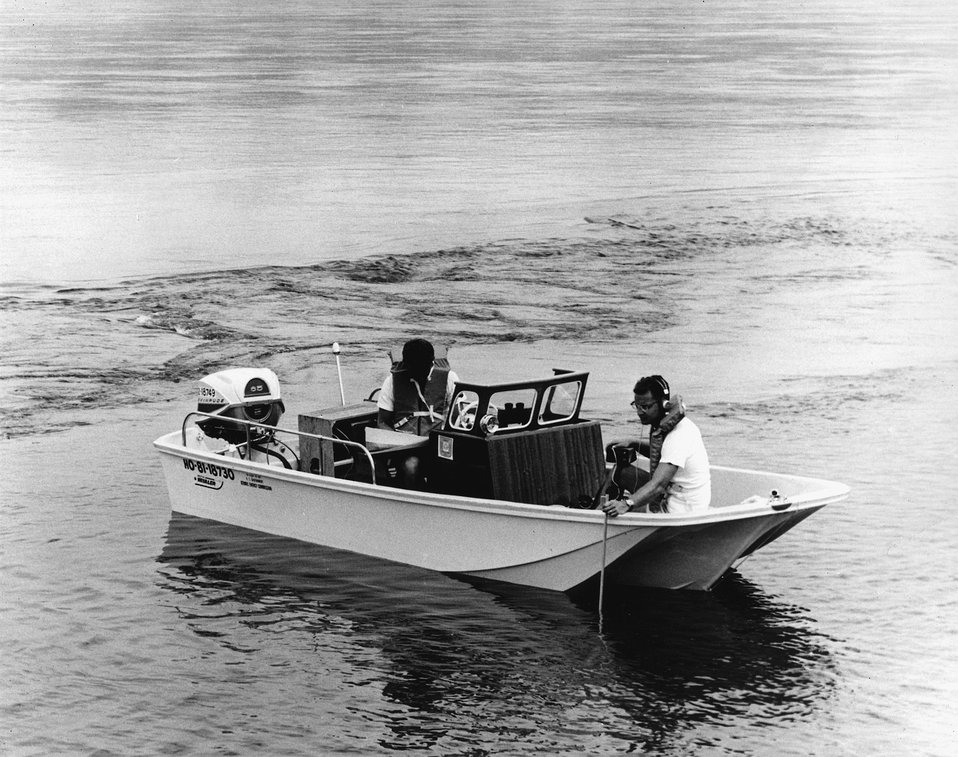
As part of studies to determine the effects of heated water discharges from reactors on migrating fish, the Pacific Northwest Laboratory and the Seattle Biological Laboratory of the U.S. Bureau of Commercial Fisheries have used sonic 'beepers' to track salmon and trout in the Columbia River near the coolant water discharges from the AEC's Hanford production reactor. c. 1971